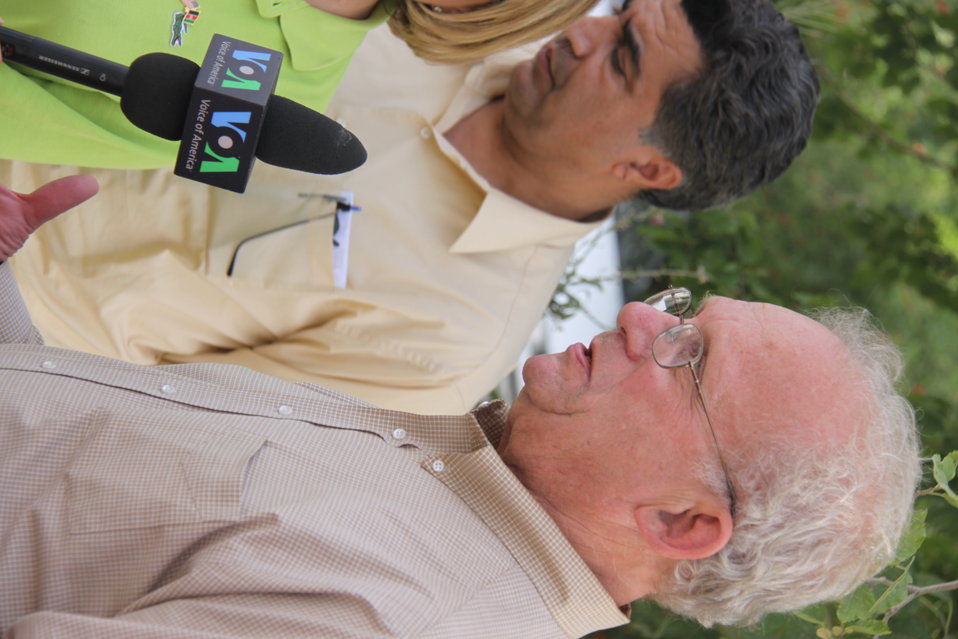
Meeting with Local Leaders in Kandahar